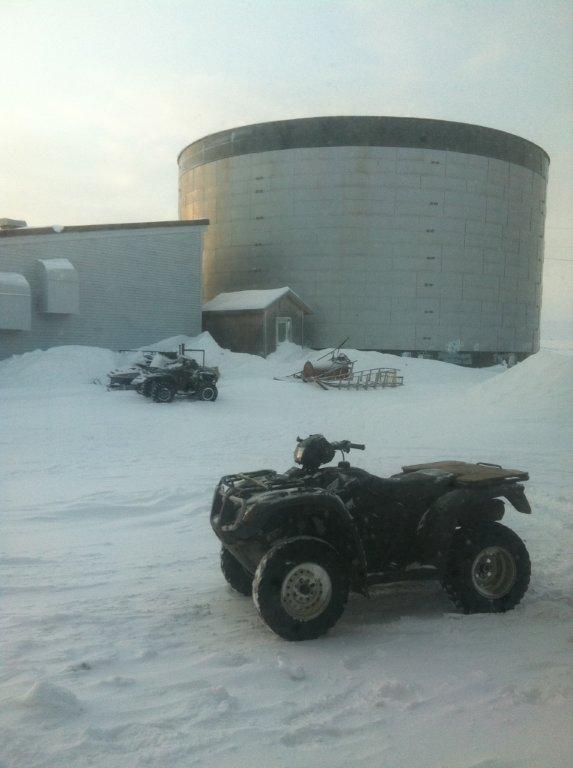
Diesel fuel bulk storage facility

Limited fuel storage capacity, extreme cold, and increased demand for heating fuel during the winter of 2012 resulted in fuel supply running short. To obtain heating fuel, villagers were making daily trips to Brevig Mission (a village six miles away) on snow machines over a frozen inlet of the Bering Sea, to tow small amounts of heating oil back to Teller.